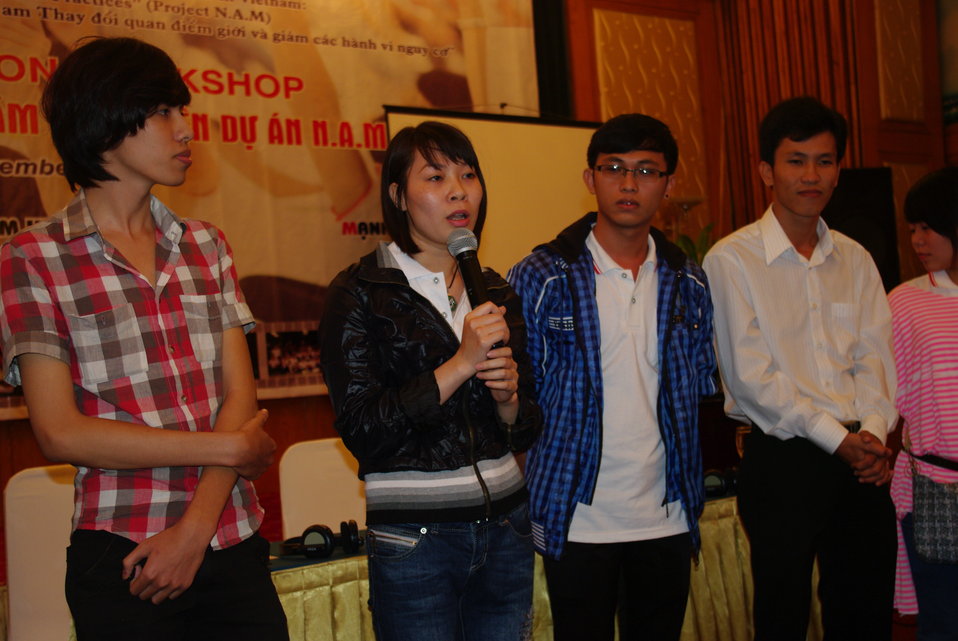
USAID Supports HIV Awareness among Street Youth and Young Men

Trainers and peer educators tell their stories on November 29, 2011, in Hanoi, Vietnam